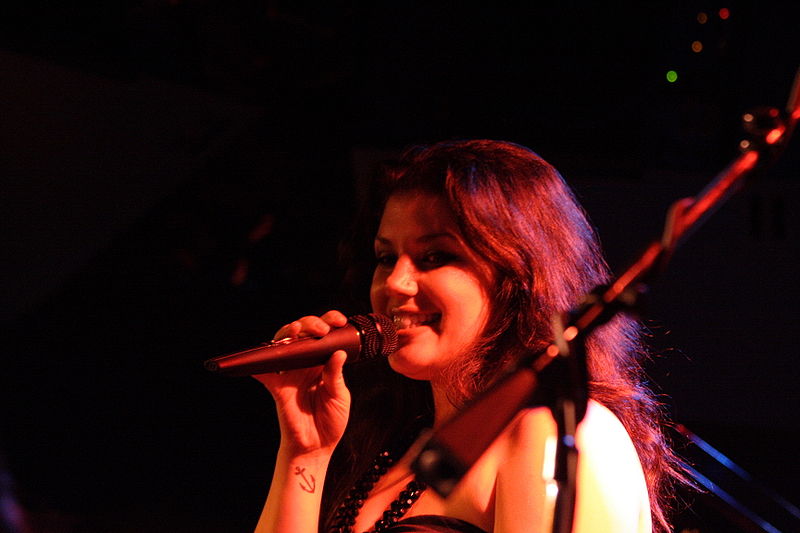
Jane Monheit in Blue Note (NY)